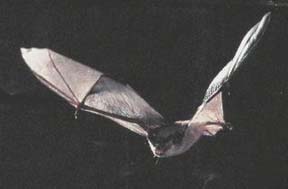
A gray bat in flight.